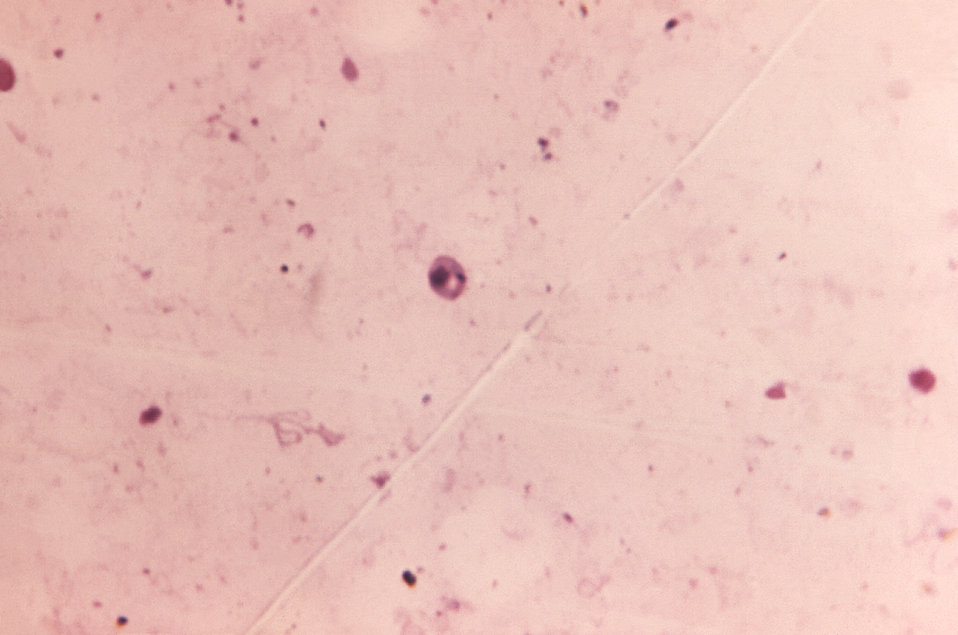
This Giemsa-stained photomicrograph revealed a Leishmania sp. protozoan, which had been taken from a smear of a suspected leishmanial lesion, and magnified 1125X.Geographic Distribution